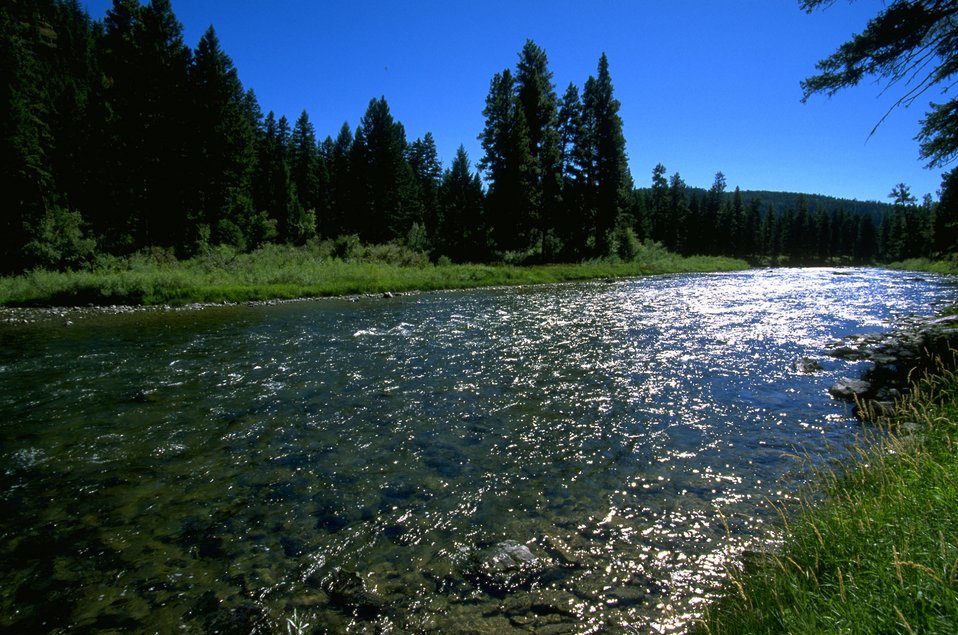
Scenic shot of Blackfoot River